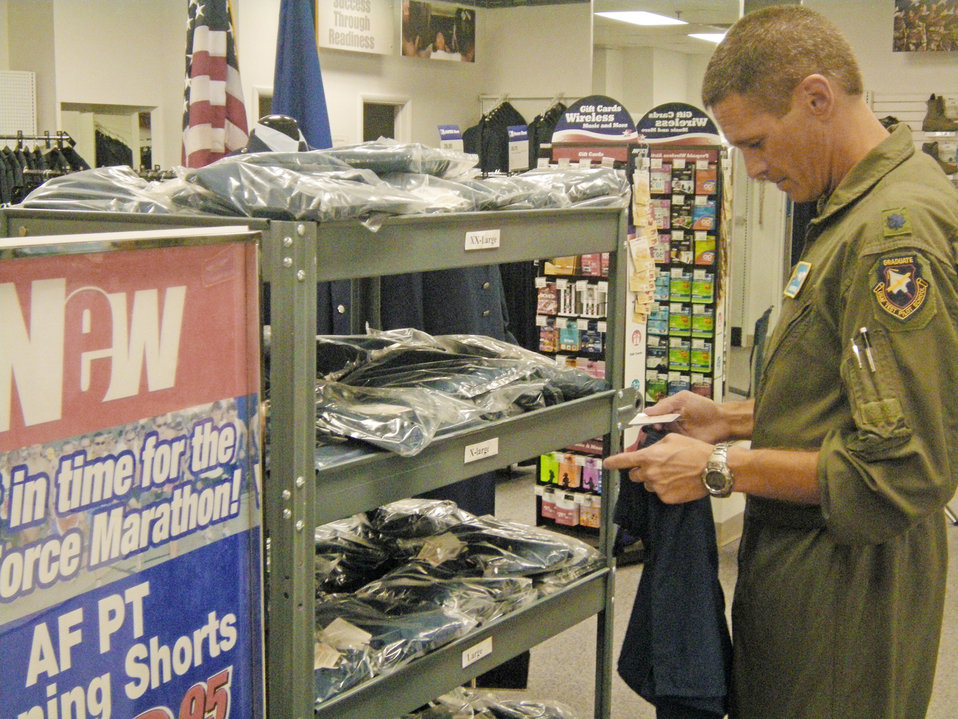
Air Force officials unveil new PT running shorts at marathon

Lt. Col. Adam Remaly checks out the new Air Force physical training running shorts Sept. 10, 2009, at the Wright-Patterson Air Force Base, Ohio. The new shorts cost $16.95 each and are available only from the Army and Air Force Exchange Service Military Clothing Sales Stores. Colonel Remaly is an engineer with the 77th Aeronautical Systems Wing.